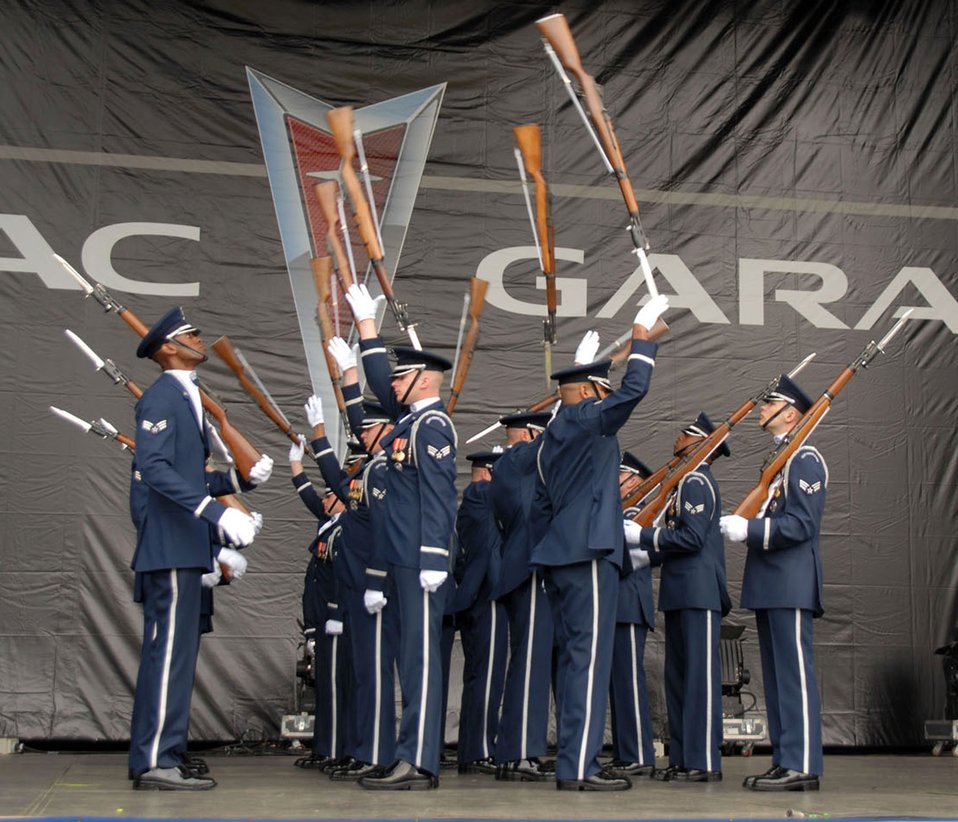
Honor Guard Drill Team keeping sharp for Air Force

Air Force Honor Guard Drill Team members perform at the opening ceremonies for the NCAA Final Four Games March 31 at Centennial Olympic Park in Atlanta. The drill team recently returned from their latest 11-day tour around the U.S., that included visits to Atlanta; Hill Air Force Base, Utah; and Salt Lake City.